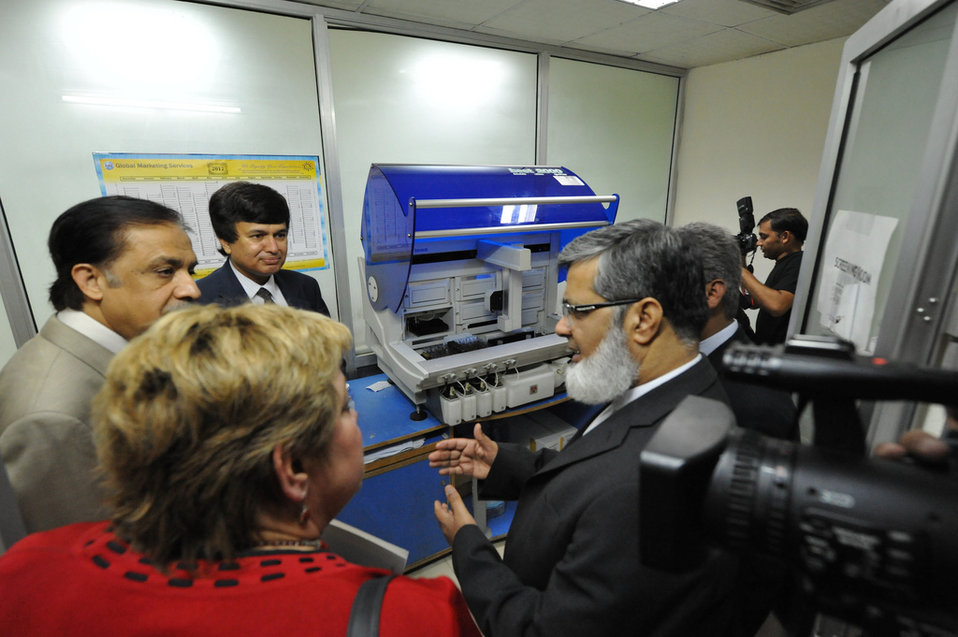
U.S. strengthens Pakistan’s ability to deliver quality health care

The U.S. Government has donated a two-year supply of blood safety kits to the Government of Pakistan to support Pakistan’s National Blood Transfusion Program. The 115,000 kits were presented by Ms. Karen Freeman, Acting Country Director for the U.S. Agency for International Development (USAID) to Mr. Imtiaz Inayat Ilhahi, Secretary of Capital Administration and Development Pakistan, today at the Pakistan Institute for Medical Sciences (PIMS).